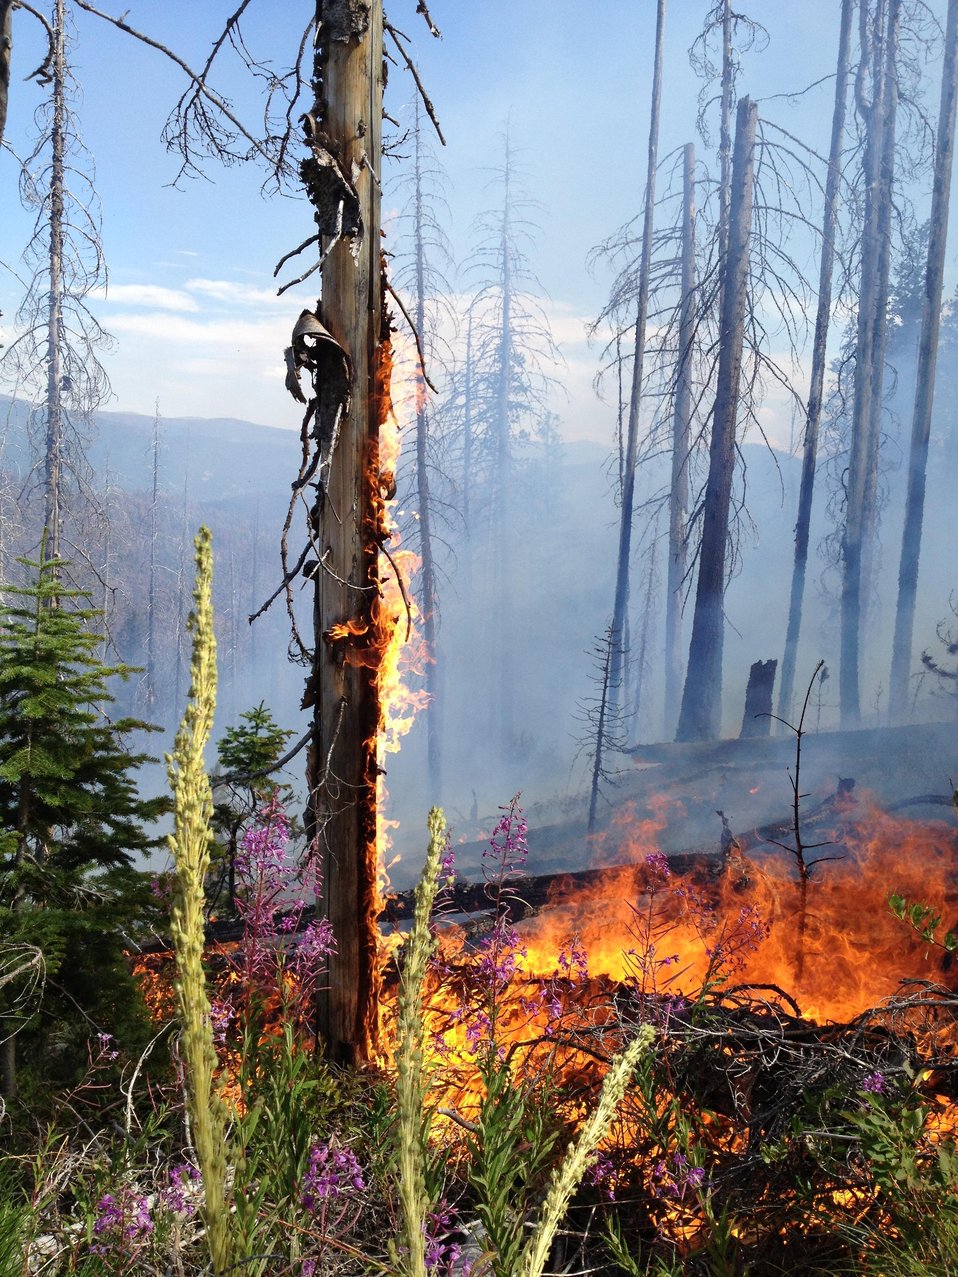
The Gold Pan Fire in the Bitterroot National Forest near Conner, MT began by lightning on Jul. 16, 2013 by lighting have consumed approximately 16,330 acres.